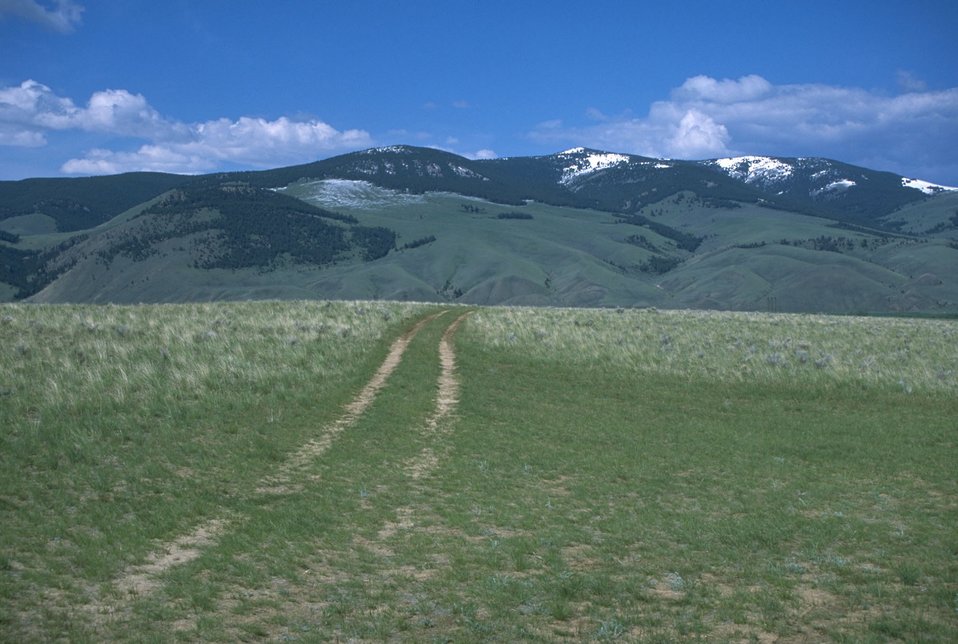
Two-track road leading to the snow-capped mountains